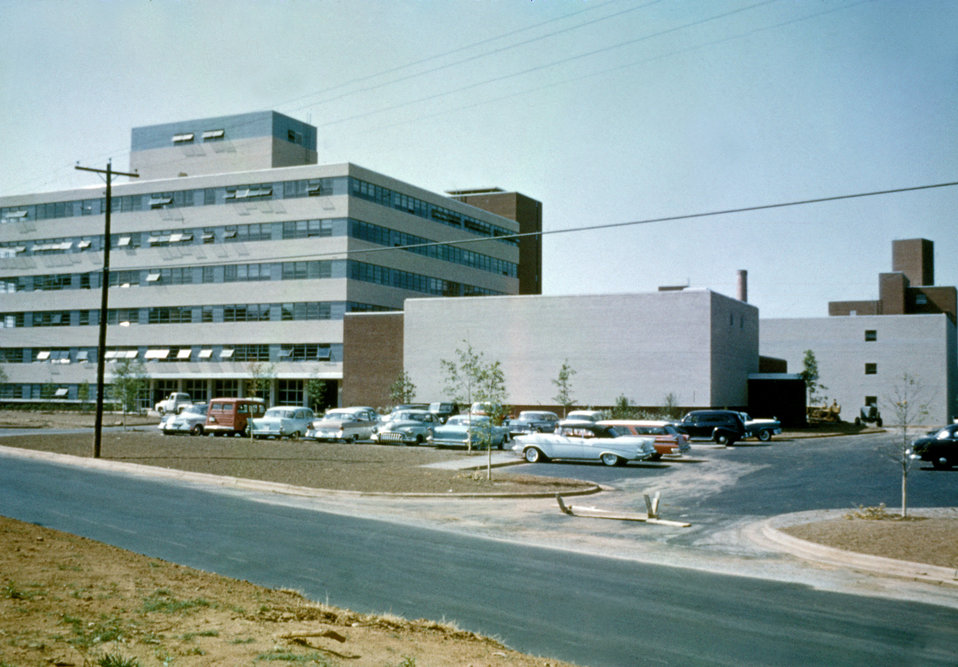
A photograph taken in the 1960s of the facade of CDC, Building 1, Clifton Road, Atlanta, Georgia.